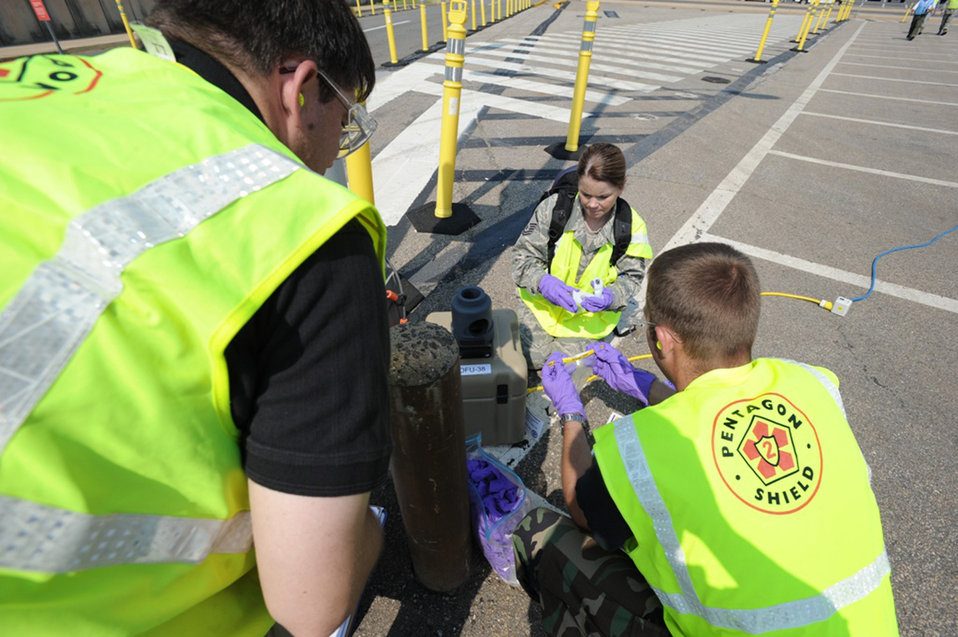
District of Washington officials provide fast, safe evacuation for biological attack exercise

Master Sgt. Michelle Getman (center) and members of the Pentagon Force Protection Agency handle small cotton filters used to test contamination levels of the air before and after a helicopter evacuation July 11 at the Pentagon. Sergeant Getman and other Air Force District of Washington Airmen worked with 18 different state and federal agencies assisting the PFPA in an Operational Response Test. The test was designed to provide first responders with information on the best methods to decontaminate people following a biological attack. Sergeant Getman is from the Air Force District of Washington Emergency Management Response team.